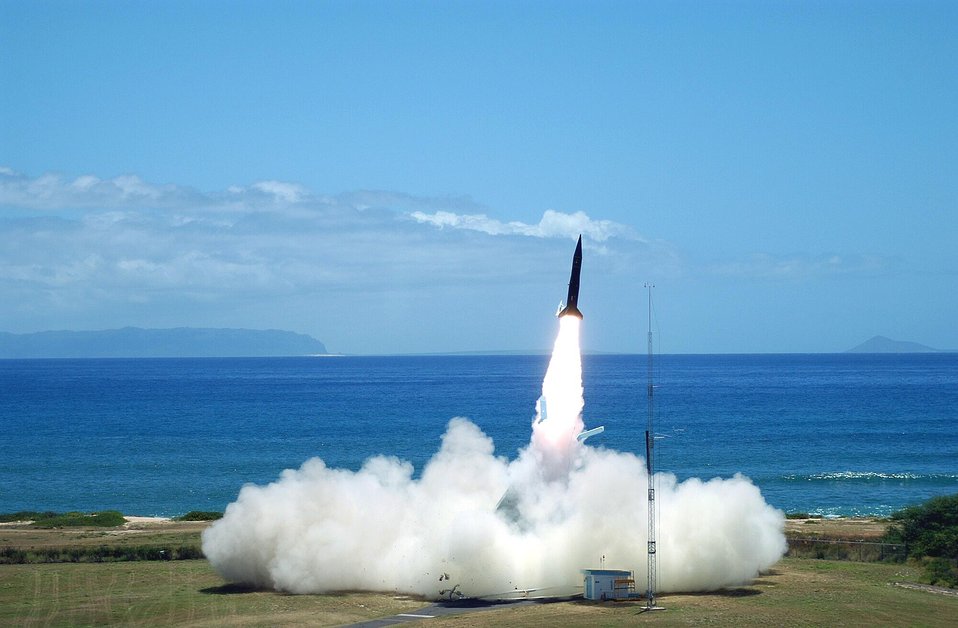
FM-5 TARGET MISSILE LIFTS OFF FROM KAUAI TEST FACILITY'S PAD 1.

FM-5 IS A MISSILE DEFENSE ROCK BEING PREPARED FOR LAUNCH. SANDIA'S KAUAI TEST FACILITY, OPERATED FOR DOE, IS ON THE U.S. NAVY'S PACIFIC MISSILE RANGE FACILITY ON THE ISLAND OF KAUAI, HAWAII. SINCE 1962 SANDIA HAS SENT SCIENTISTS AND TECHNICIANS TO CONDUCT ROCKET FLIGHT TEST EXPERIMENTS RANGING FROM OFFENSIVE AND DEFENSIVE WEAPONS TESTING TO ATMOSPHERIC STUDIES AND HIGH TECH STAR GAZING.